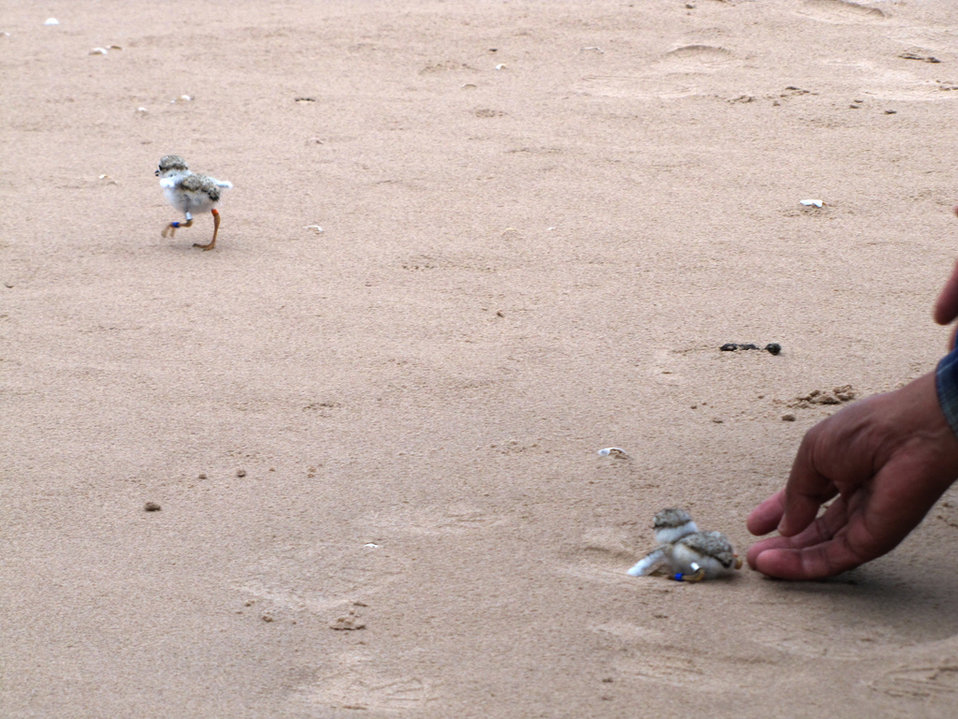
June

banding piping plover chicks
Seney National Wildlife Refuge, MI